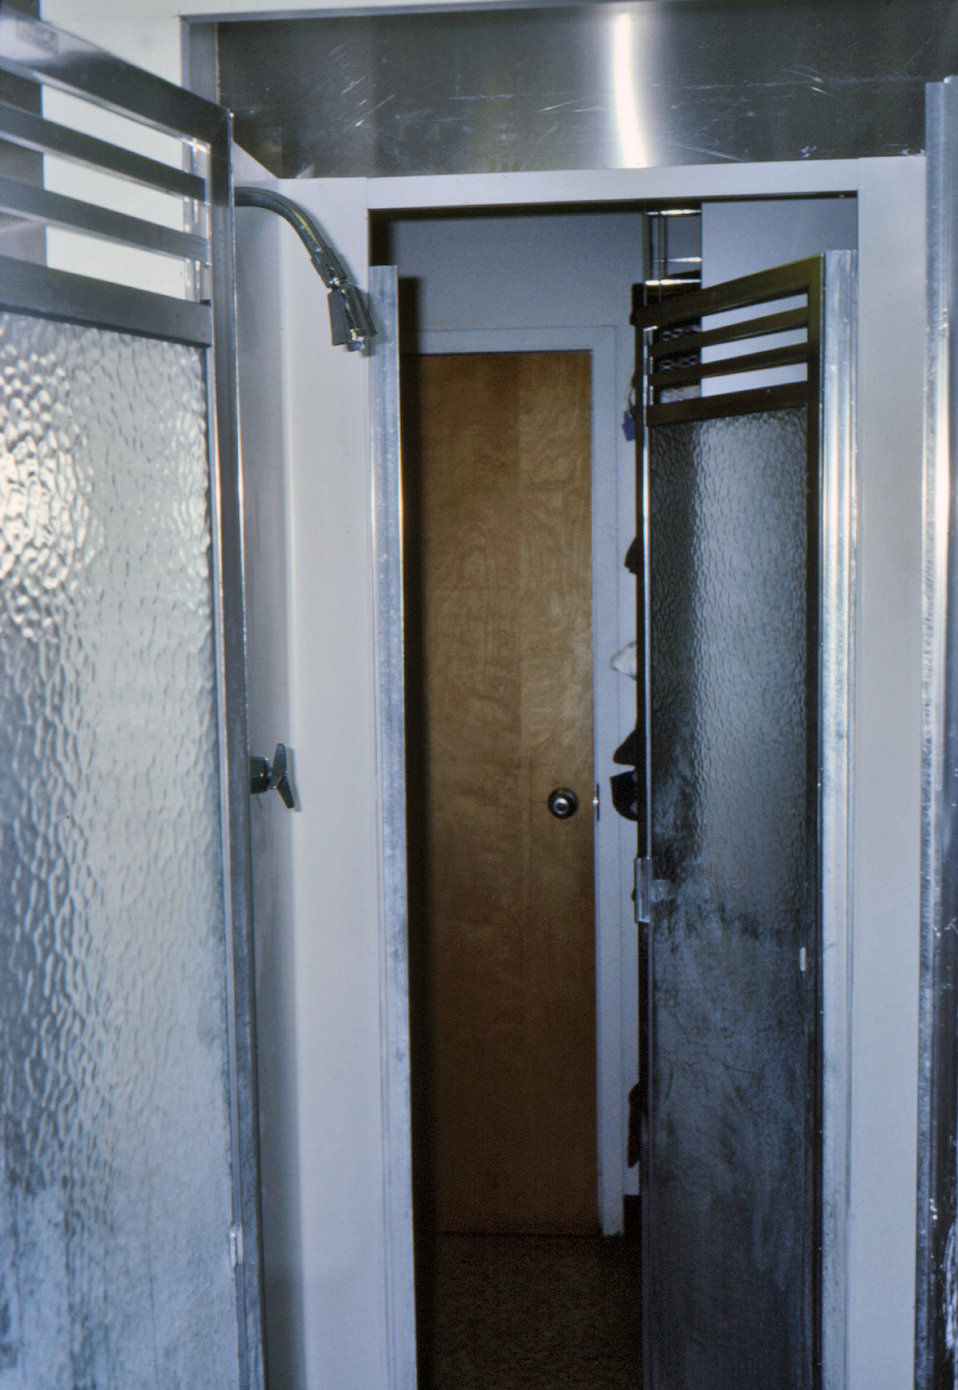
This 1975 photograph depicted a laboratory shower located at the entrance to the CDC's first maximum containment laboratory facility. Jim Lang was among many of the CDC's laboratory researchers who used this facility during the Marburg investigation of 1975.